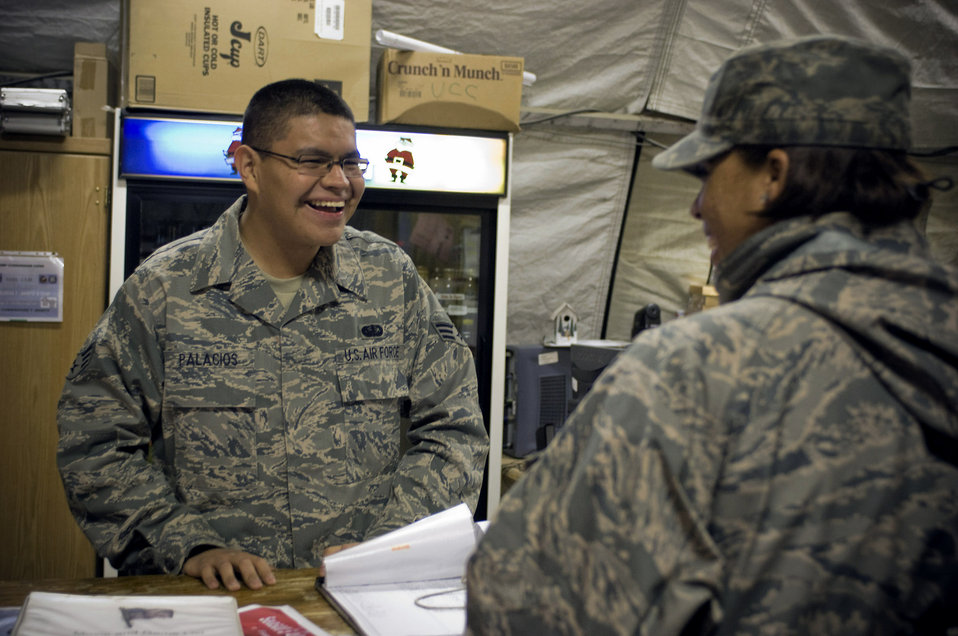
Airman helps troops connect with families during holidays

Senior Airman Marco Palacios helps a customer in the services tent Dec. 17 at Bagram Airfield, Afghanistan. Airman Palacios, deployed from Beale Air Force Base, Calif., made an effort to improve morale for deployed Airmen over the holidays by taping readings of